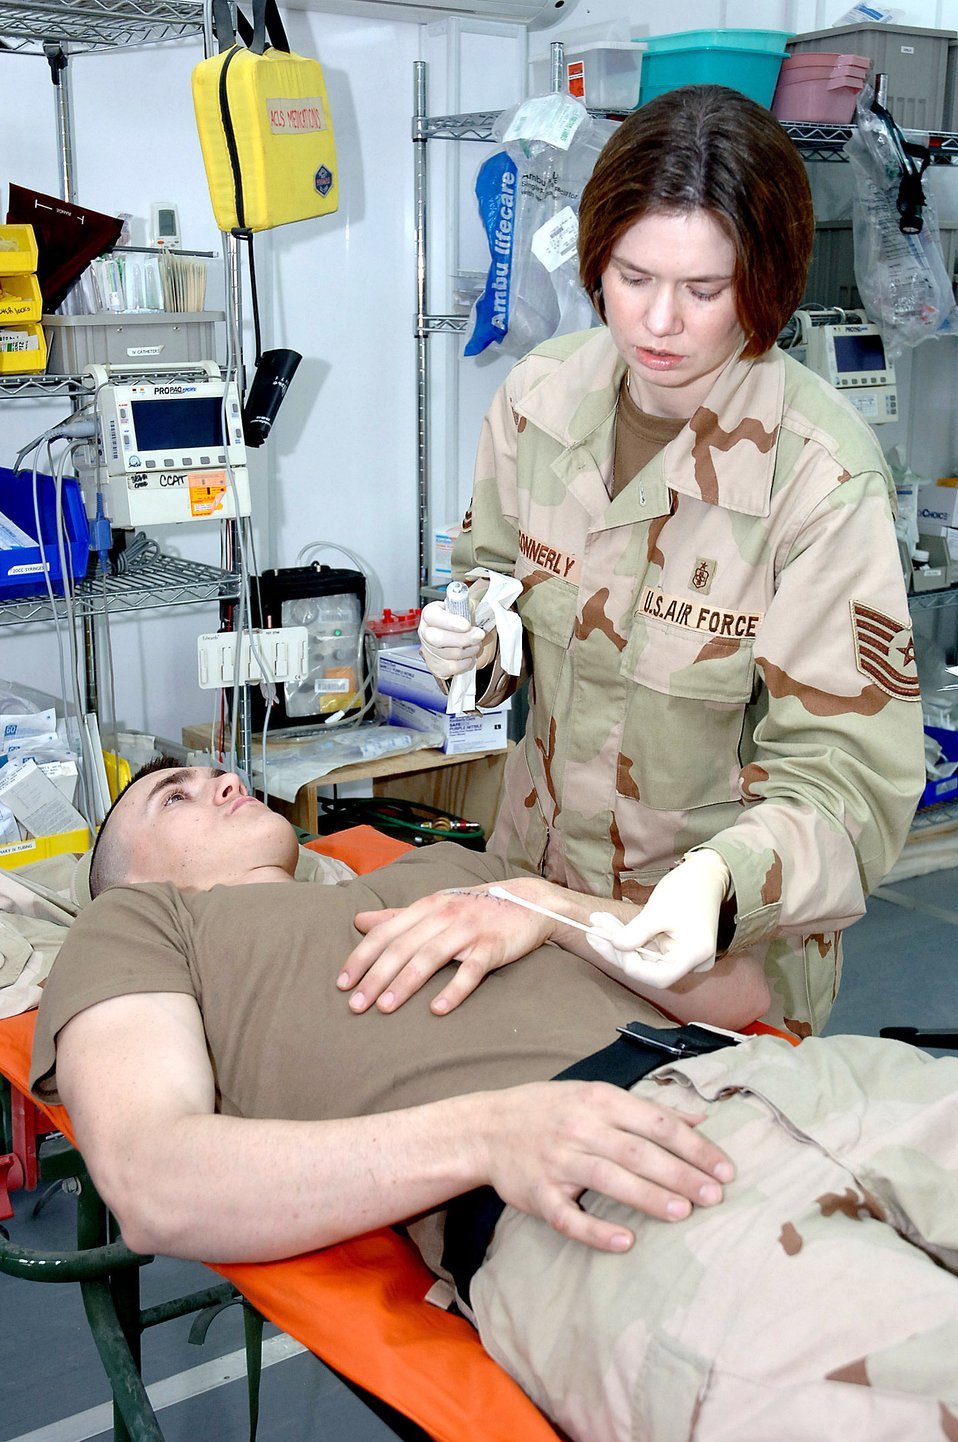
Medics leave dust behind

SATHER AIR BASE, Iraq (AFPN) -- Tech. Sgt. Sherri Connerly treats a cut on Army Specialist Michael Harold, 755th Adjunct General Post Company, Camp Liberty, Iraq, at a new medical clinic at Sather Air Base, Baghdad International Airport, Iraq. She is with the 447th Expeditionary Medical Squadron which recently moved from old temper tents to a new 15,000-square foot modular clinic. The new clinic more than doubles the space available to the deployed medical team that provides primary and emergent medical care to Airmen at the air base and also to Department of Defense contractors, U.S. Army and Marines and Iraqi military forces based at the sprawling Victory Base Complex located at BIAP.